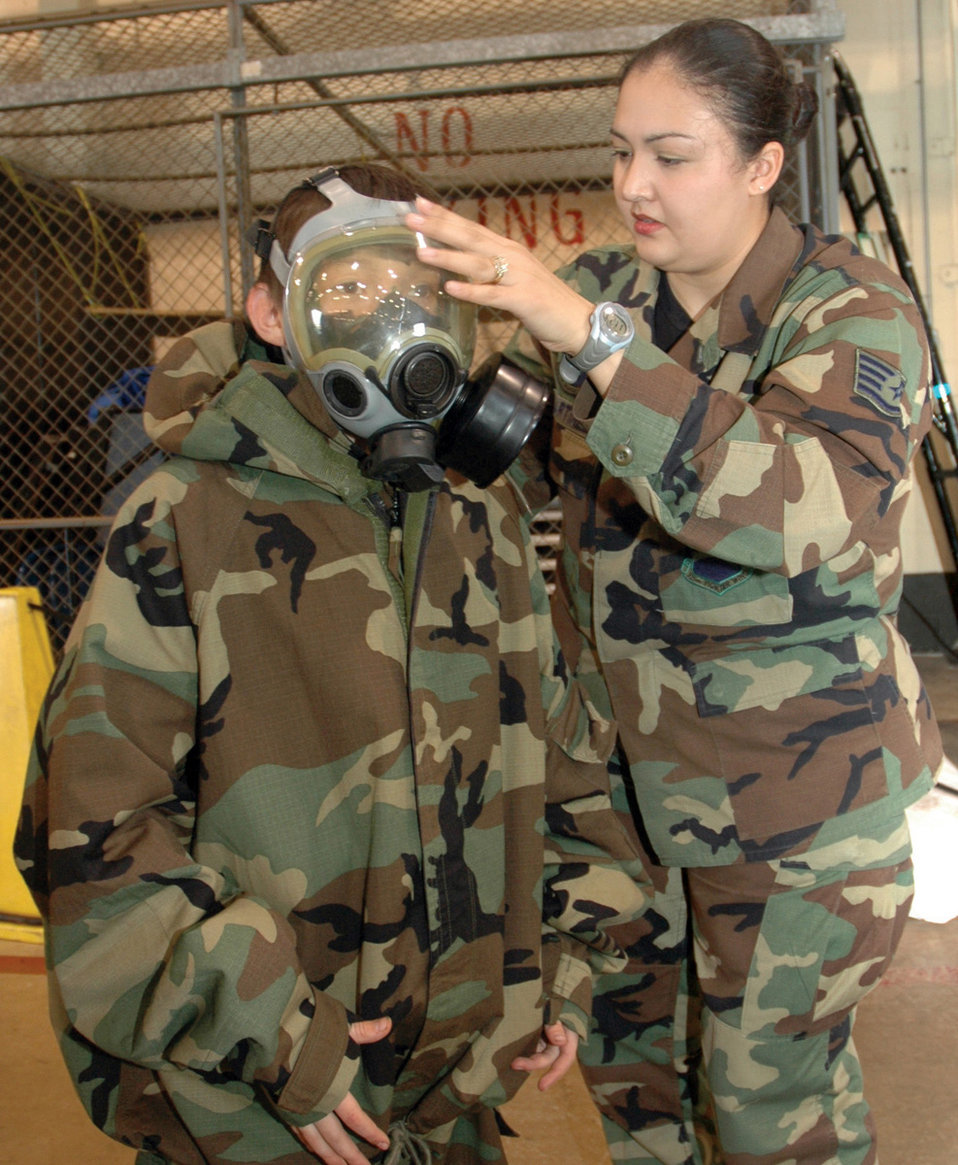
Children experience 'deployment' firsthand

TYNDALL AIR FORCE BASE, Fla. (AFPN) -- Trent Frey gets help donning his chemical warfare gear from Staff Sgt. Maria Martinez of the 325th Civil Engineer Squadron.